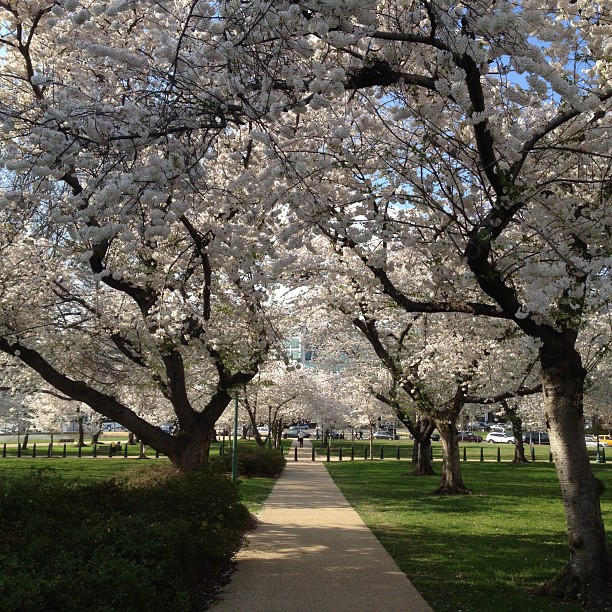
Tunnel of cherry blossoms in the Senate park.